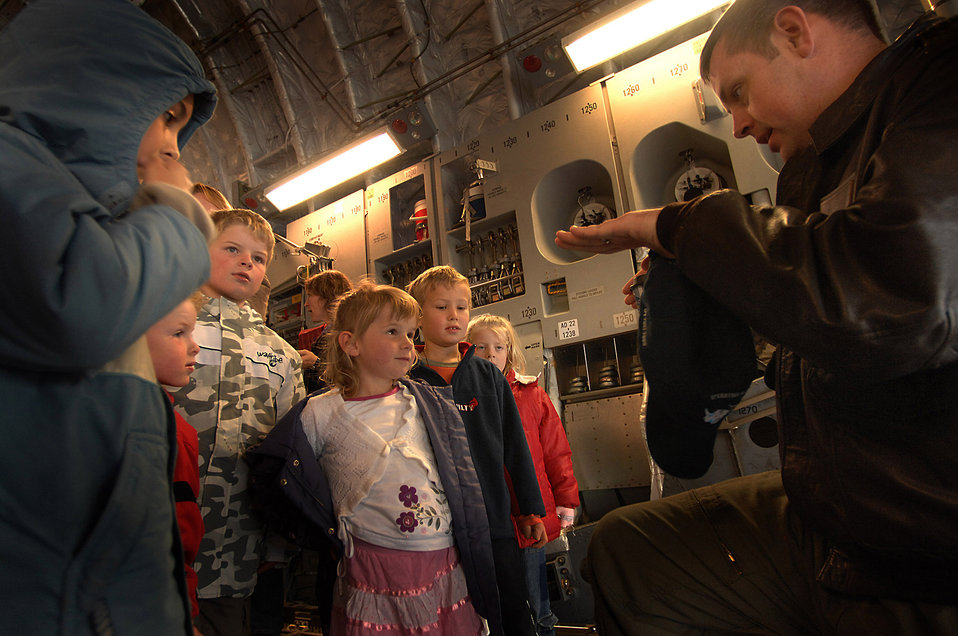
Deep Freeze Airmen warm New Zealand community's heart

Capt. Corey Simmons explains features of the C-17 Globemaster III to a group on New Zealand children April 17 in Christchurch, New Zealand. The C-17, flown by a Reserve and active-duty crew, is staging out of Christchurch for Operation Deep Freeze in support of the National Science Foundation's Antarctica research program. Captain Simmons is a pilot from the 62nd Airlift Wing, McChord Air Force Base, Wash.